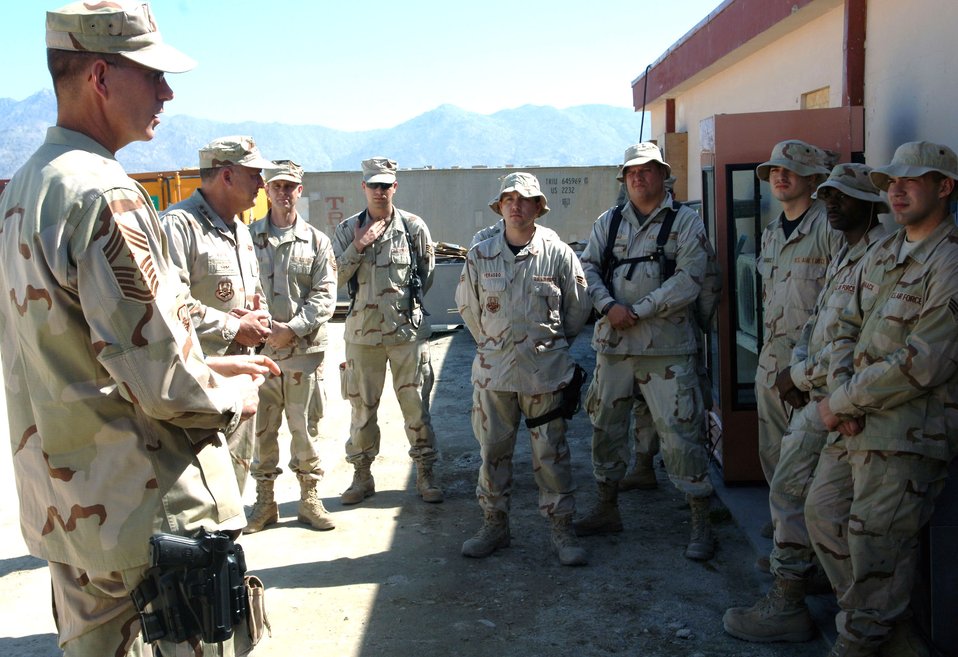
CENTAF leaders visit Airmen deployed to Mehtar Lam

Lieutenant Gen. Gary North and Chief Master Sgt. Richard Small visit with Airmen at the Mehtar Lam Provincial Reconstruction Team in Afghanistan. General North is the U.S. Central Command Air Forces commander and Chief Small is the CENTAF command chief master sergeant.